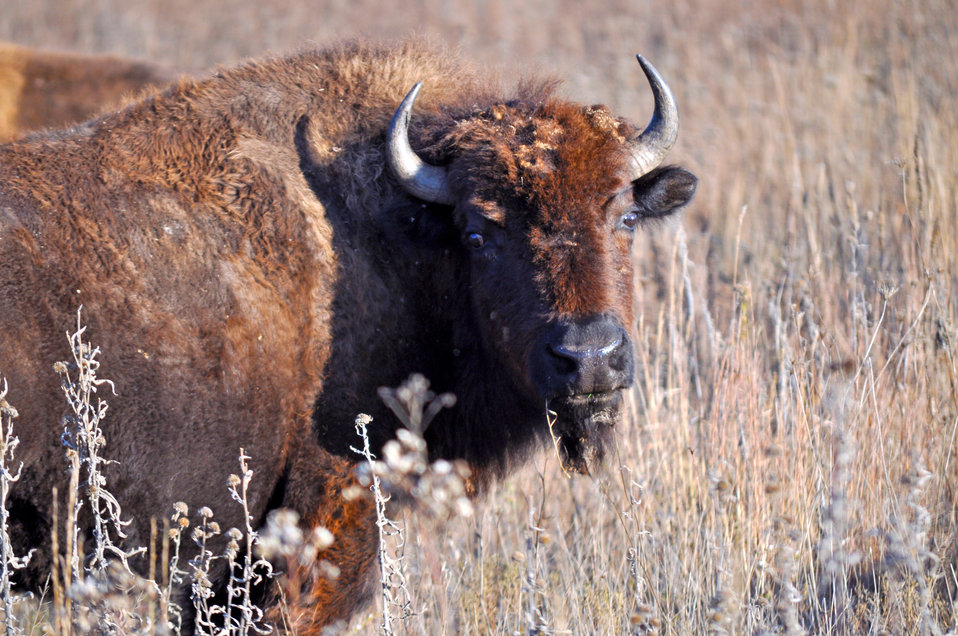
Bison at Dunn Ranch, an a prairie restored by The Nature Conservancy in northwest Missouri.